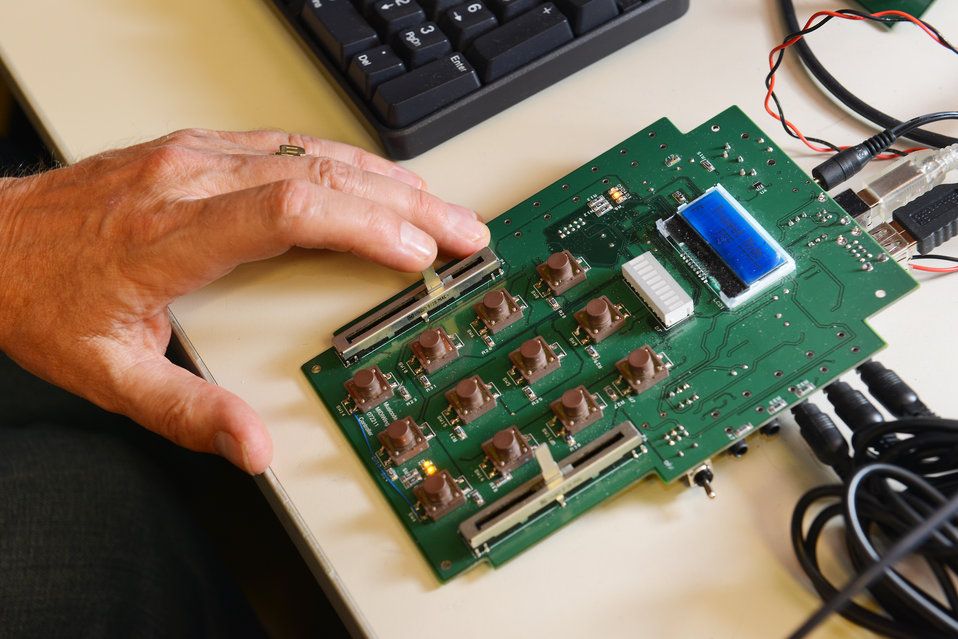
At Sandia National Laboratory , the advanced microcontroller circuitry inside the MidiWing musical instrument can calculate the many different frequencies or pitches that produce complex musical sounds from the position of a joystick, mouse or other input.